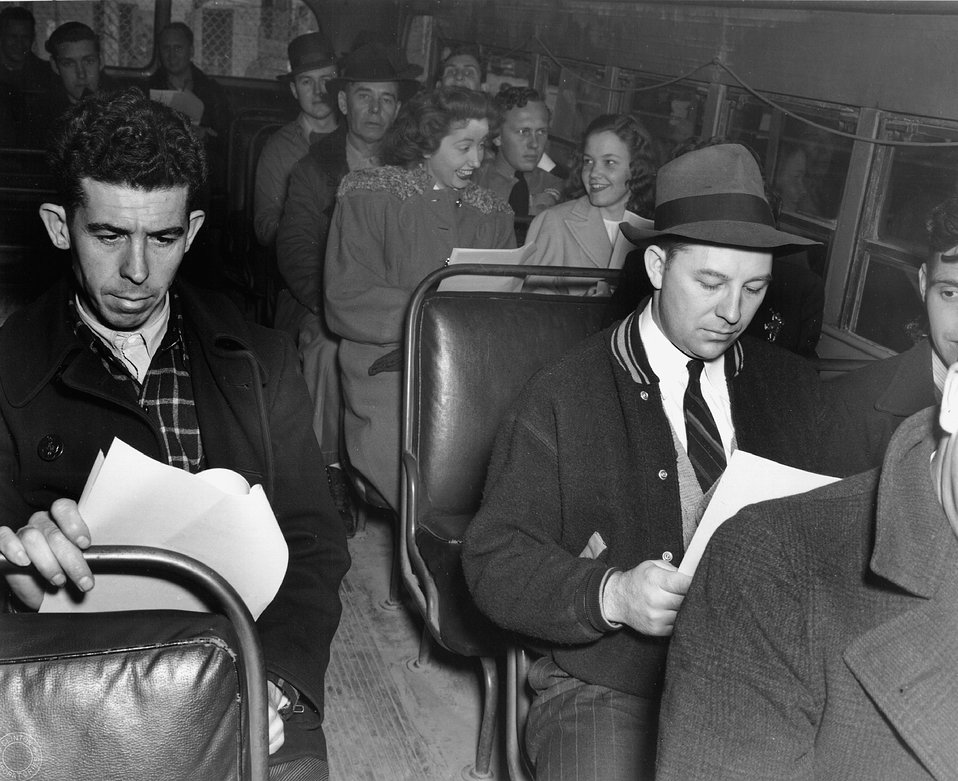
War workers commuting by bus. The strict security at Oak Ridge meant that commuters confined their conversations to lighter topics. c. undated